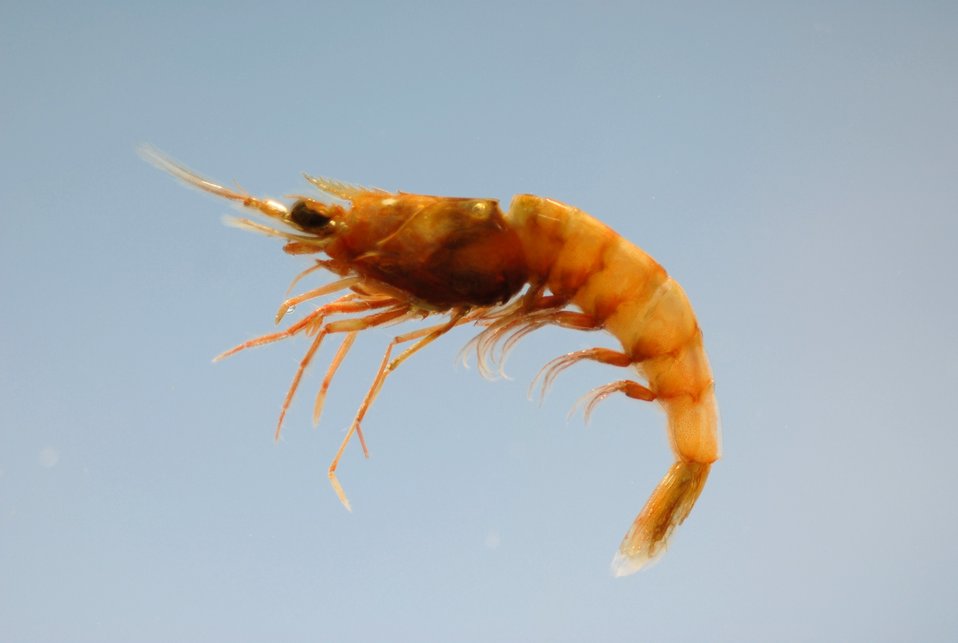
Mesopeneaus tropicalis